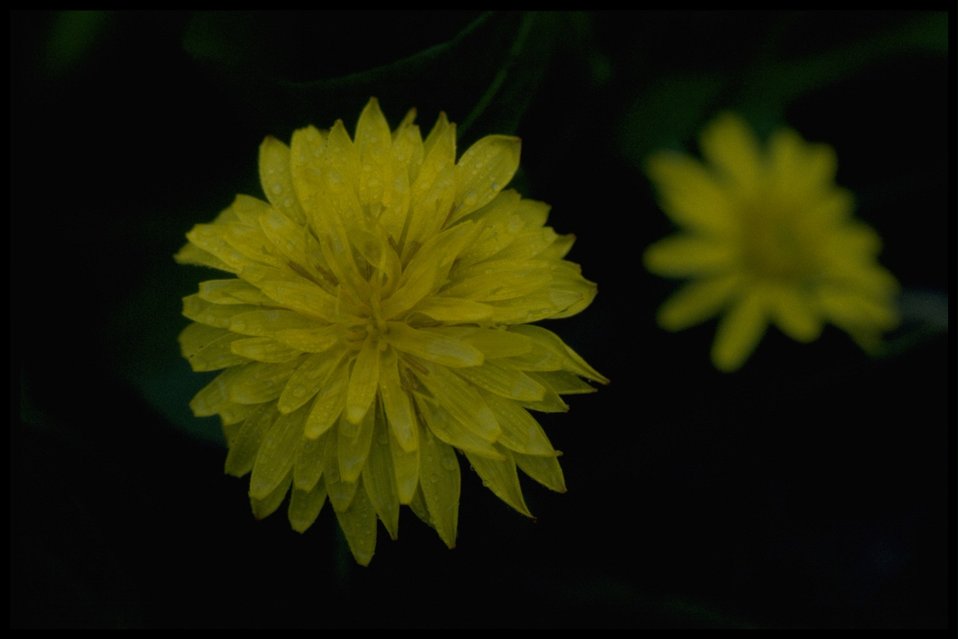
Closeup shot of prairie dandelion (Microseris troximoides).